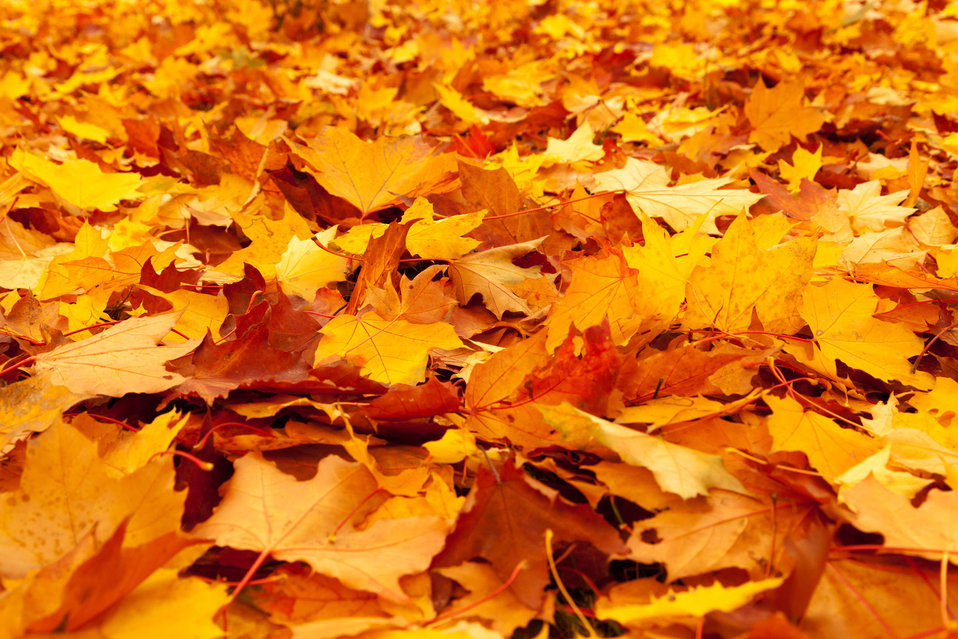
Yellow maple leaves autumn background image.